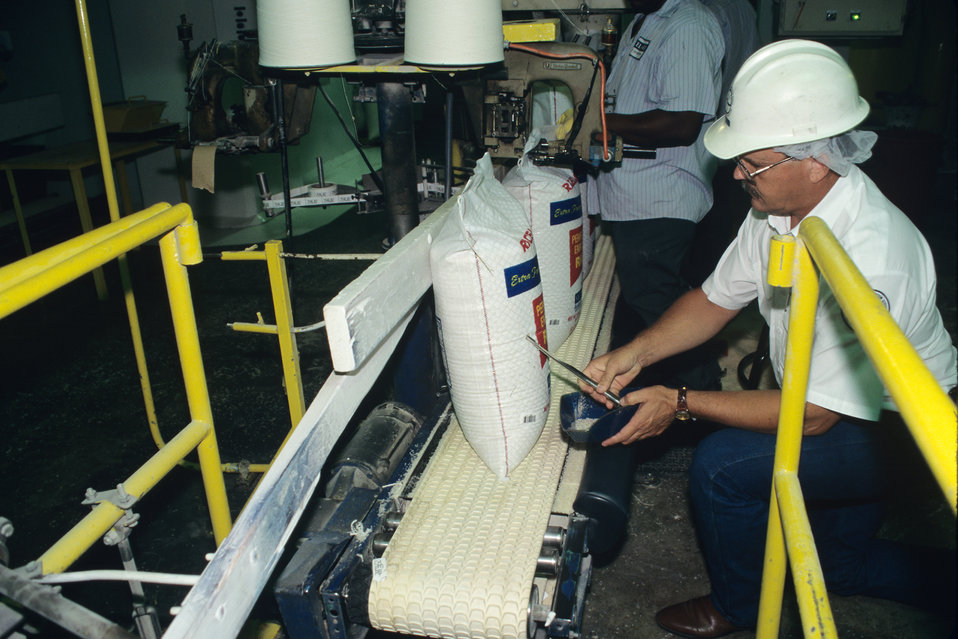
A U.S. Department of Agriculture (USDA) Grain Inspection, Packers and Stockyards Administration (GIPSA) Federal Grain Inspection and Weighing Services (FGIS) agent performs online rice bagged lot sampling at Riceland Foods Incorporated in Jonesboro, AR on Sept. 1, 1996. The FGIS agent is using a grain trier to puncture the bag and collect a representative sample of rice for testing. USDA GIPSA offers inspection services for rice upon request on a fee basis for both domestic and export shipments. Rice inspection services are divided into two basic types: inspection for grade or factor analysis without grade. Inspection for grade involves analyzing the sample according to the quality factors listed in the Official U.S. Standards for Rice and certifying the applicable numeric grade designation, the quality factors responsible for the grade assignment, and any other quality factors the customer requests. Factor analysis involves the analysis of quality factors requested by the applicant for service without the certification of an applicable numeric grade designation. Factors requested by applicants might include free fatty acid, total oil and free fatty acid, stain as a count, broken in brown rice, false smut, and aflatoxin. Official inspections result in the issuance of an official certificate, which reports the grade of the rice. U.S. and international buyers rely on official USDA inspection certificates to provide accurate, official descriptions of the grade, class, and condition of the inspected rice. Official certificates are receivable by all offices and all courts of the United States as prima facie evidence of the truth of the statements stated thereon.